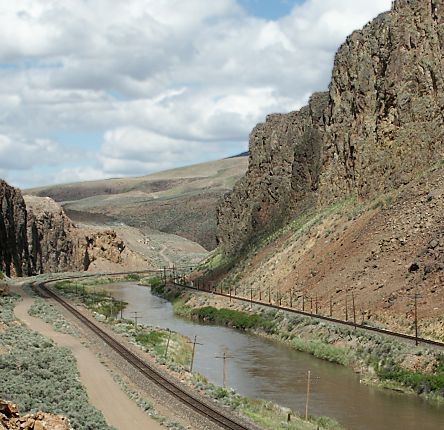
Palisade Canyon in 2008.